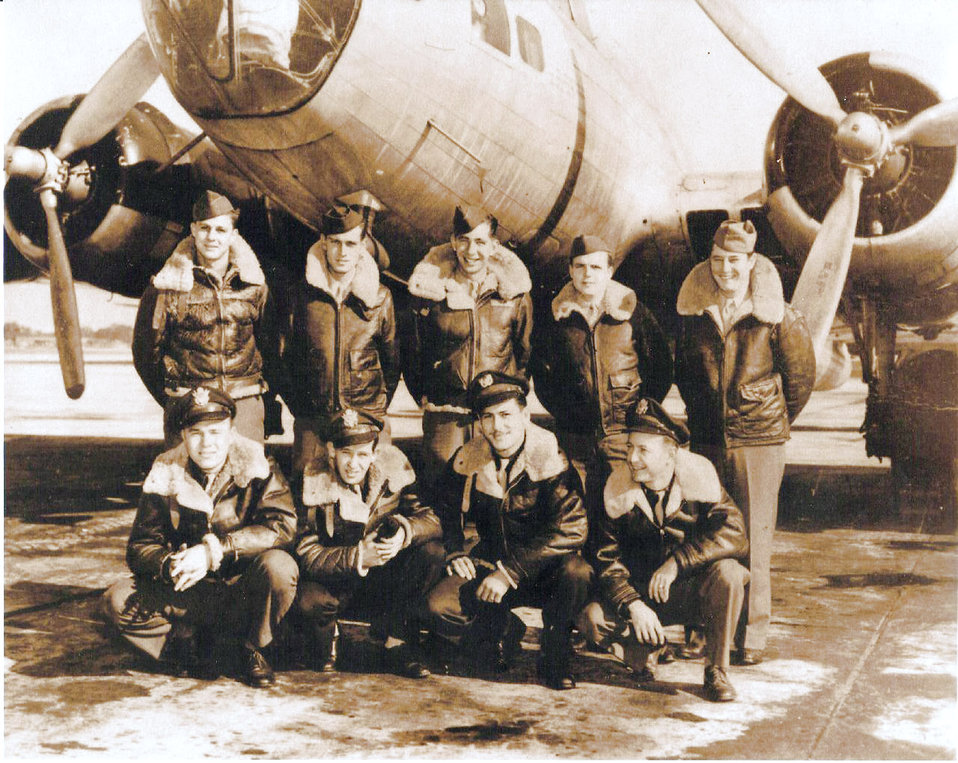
Airman finds piece of family history at Lackland

A World War II flight crew stands in front of the